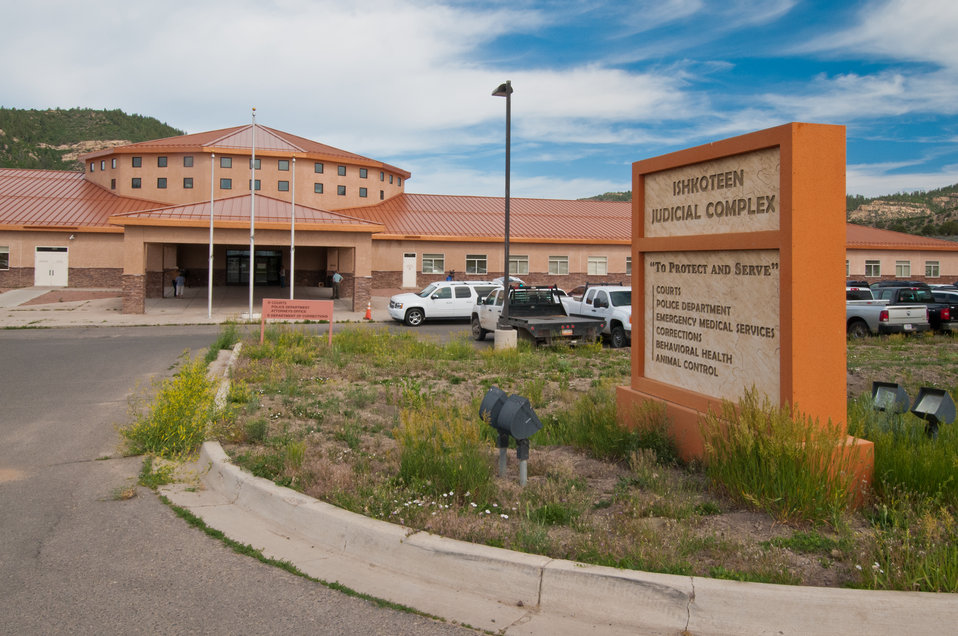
Community and tribal members of the The Jicarilla Apache Nation were able to listen to employees of the U.S. Department of Agriculture's (USDA) Natural Resources Conservation Service (NRCS) explain conservation programs offered by the agency during a Conservation Planning Meeting at the Jicarilla Apache Nation in Dulce, NM on Wednesday, Jun. 12, 2013.